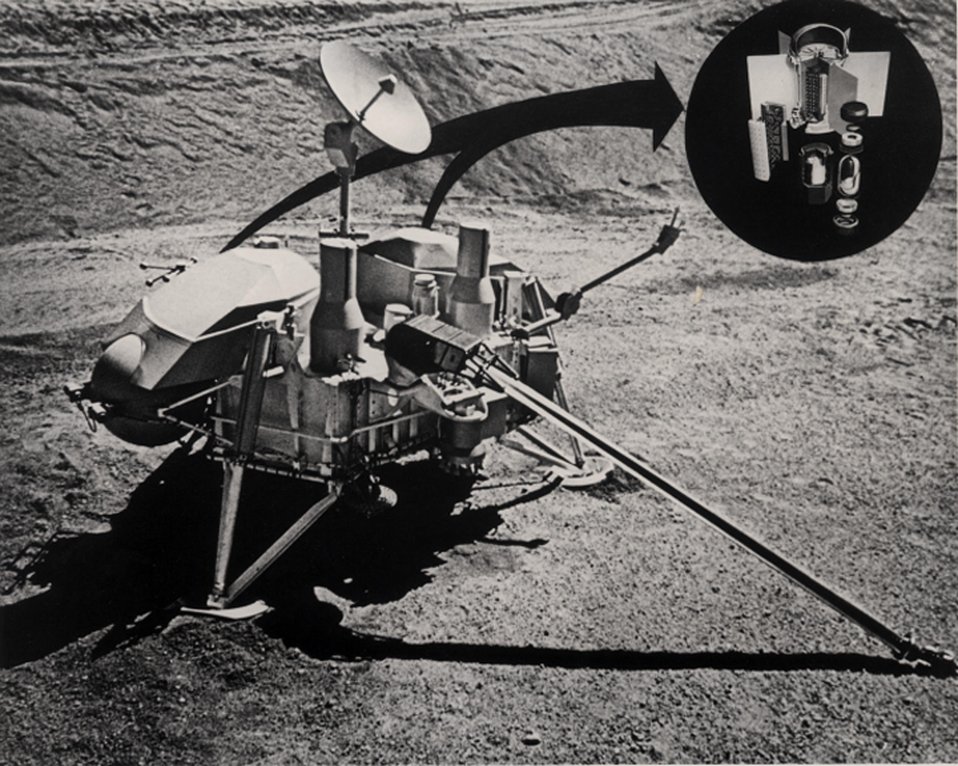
An artists sketch of the Viking spacecraft's nuclear-powered landing vehicle as looked on Mars after its scheduled landing July 4.